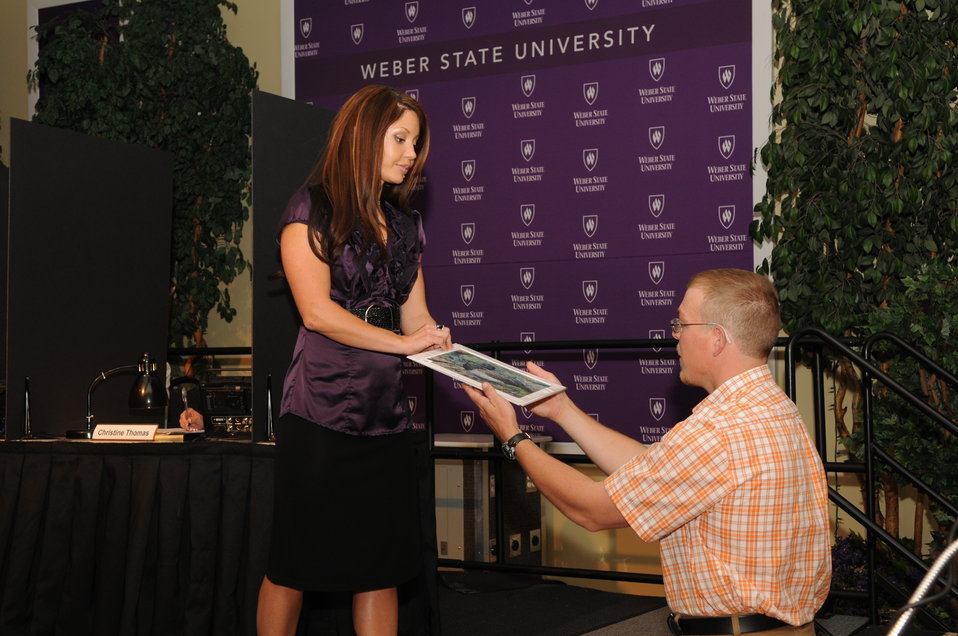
Passing of the artwork

The U.S. Fish & Wildlife Service sponsored the 2012 Federal Duck Stamp Art Contest September 28 and 29 in Ogden, Utah, at Weber State University. A panel of five judges was responsible for choosing the art work used to design the 2013-2014 Migratory Bird Hunting and Conservation Stamp.